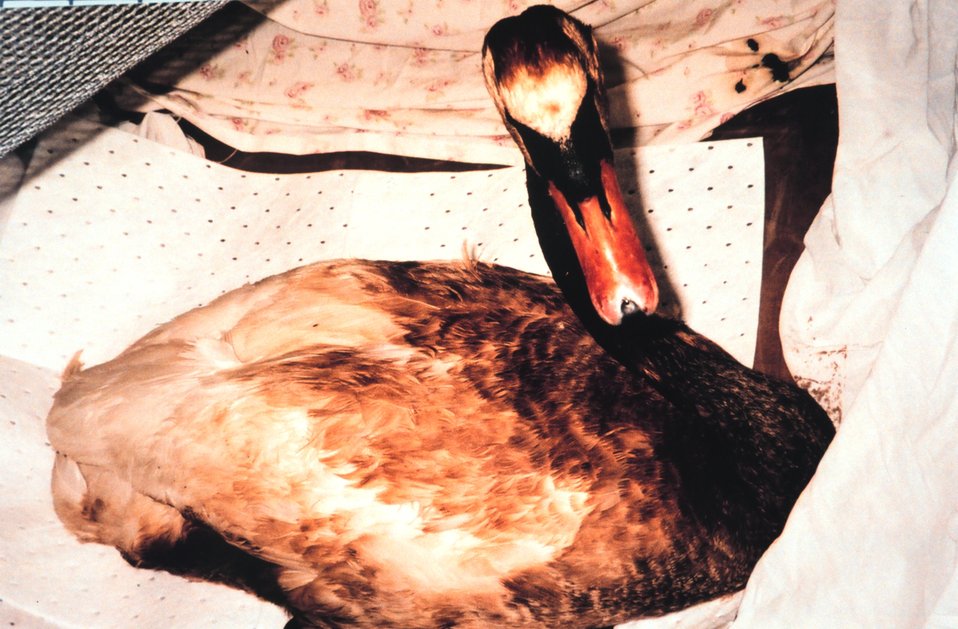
An oiled swan, one of many wildlife victims of the April 7th oil spill in Swanson Creek.